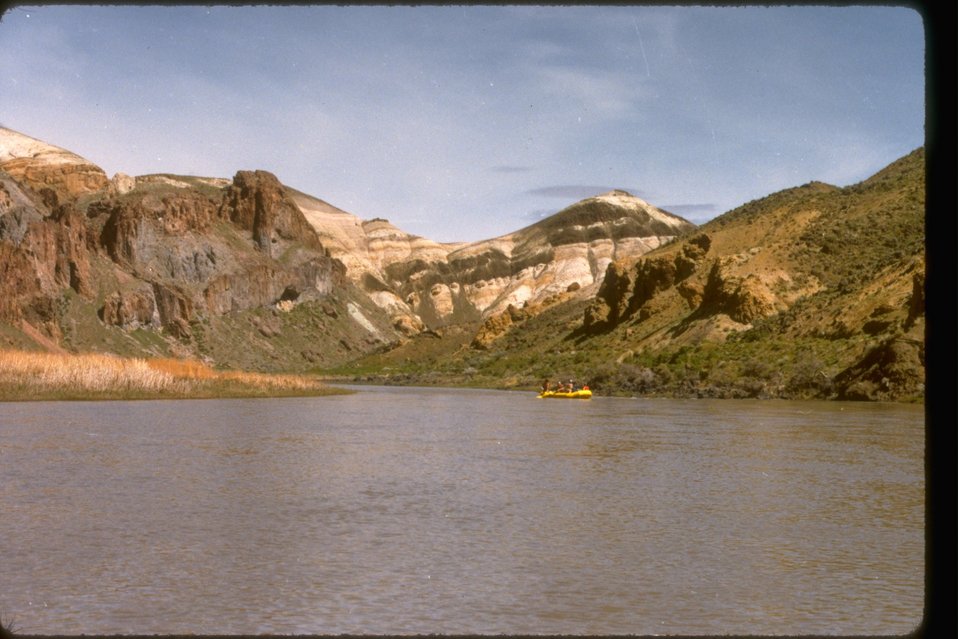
Rafting on the Owyhee River in the Owyhee Breaks Wilderness Study Area. OR 3-59